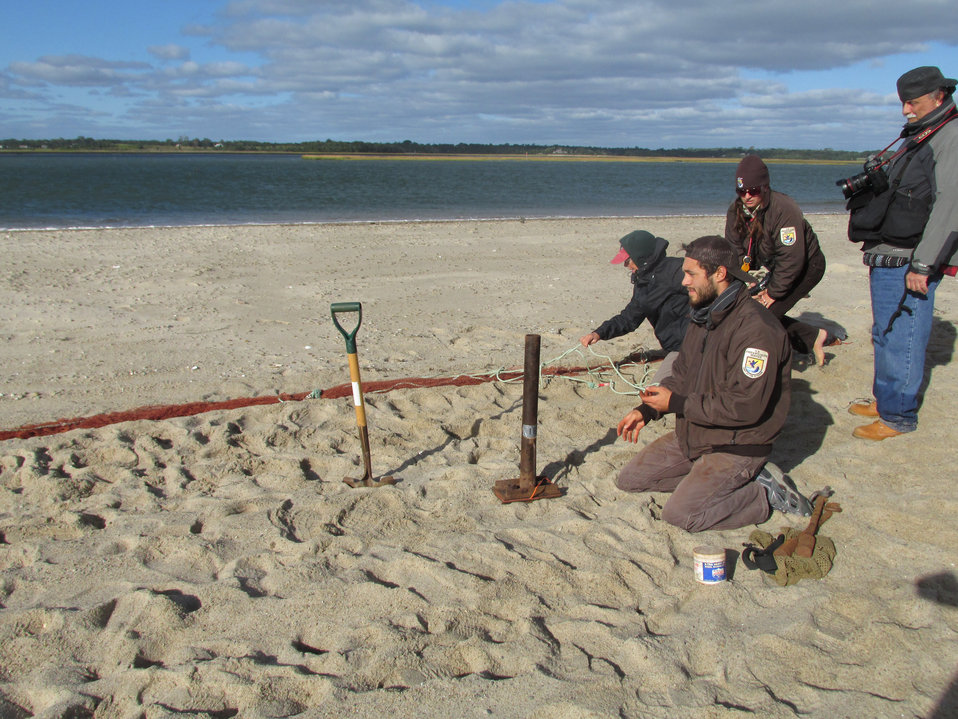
Red knot cannon-netting on Cape Cod

Yianni Laskaris with Monomoy National Wildlife Refuge prepares one of the cannons at the north end of Nauset Beach.